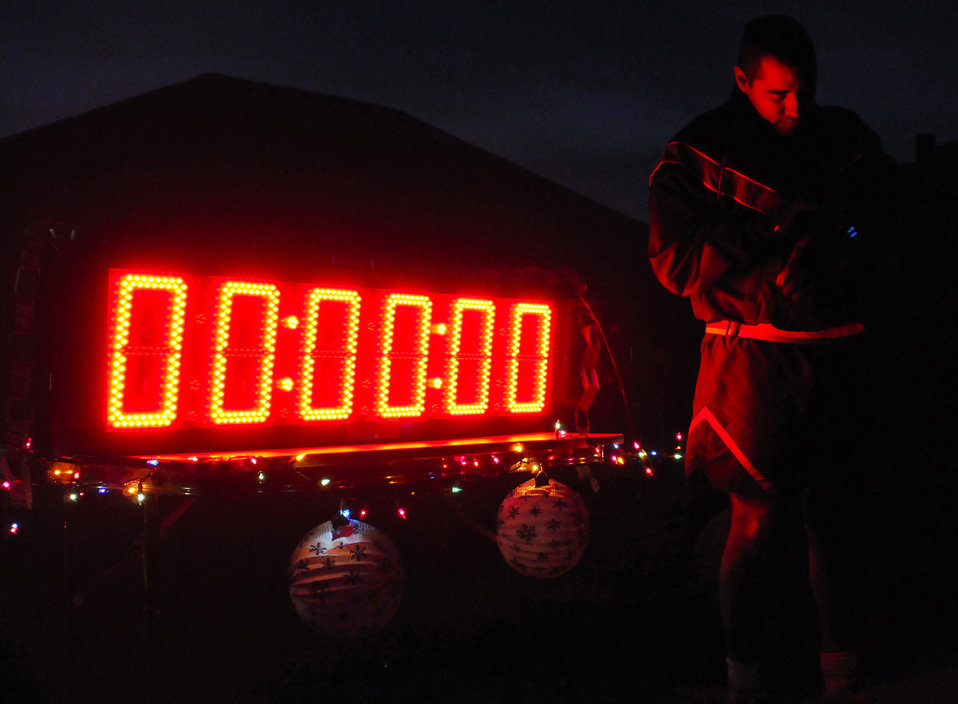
It's run time

Master Sgt. Ed Tovar sets his watch just before the Jingle Bell 10K run at an air base in Southwest Asia Dec. 24, 2010. The run was the final event for the 386th Air Expeditionary Wing's 12 Days of Christmas Fitness Challenge. The sergeant is assigned to the 467th Expeditionary Logistics Readiness Squadron.